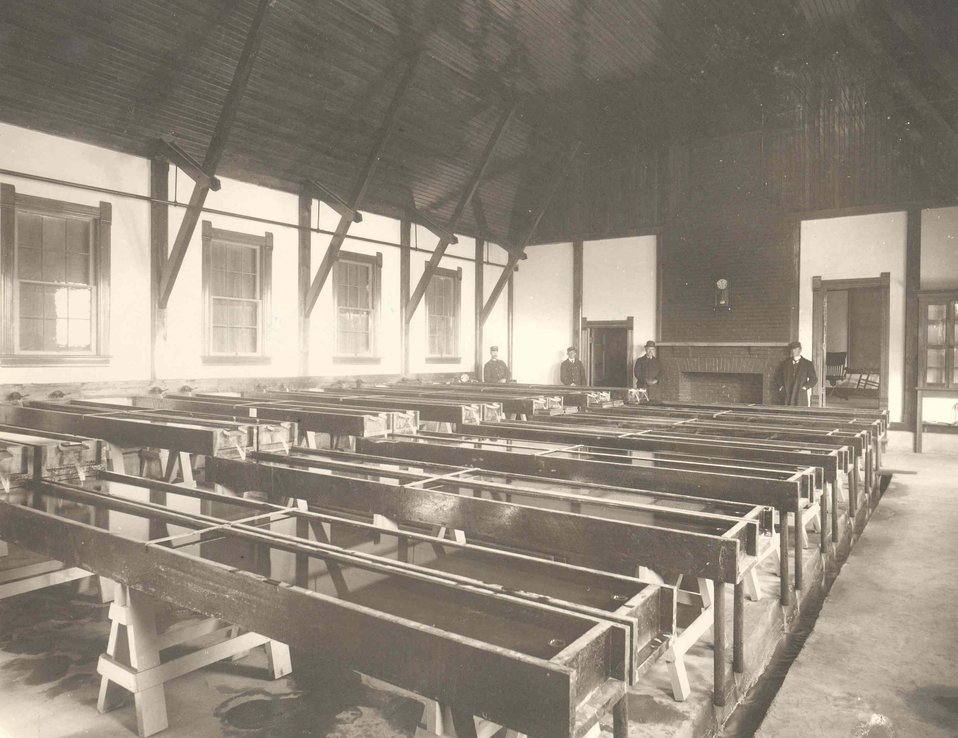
D.C. Booth Historic National Fish Hatchery

D.C. Booth in 1899, also called the Spearfish Station at that time.